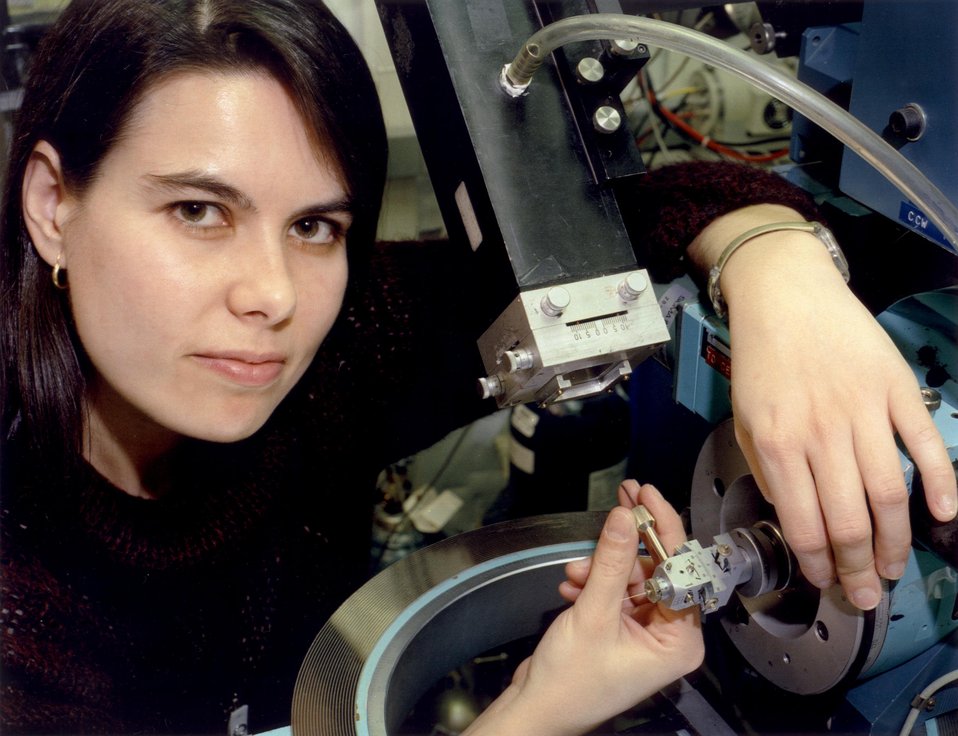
B. NOHEDA, BNL PHYSICS DEPARTMENT EXPLORES HIGH PERFORMANCE TRANSDUCERS.

BNL IS STUDYING PIEZOELECTRIC MATERIALS, MATERIALS THAT CAN BE DEFORMED BY THE APPLICATION OF AN ELECTRIC FIELD, OR THAT PRODUCE AN ELECTRIC CURRENT WHEN PHYSICALLY DEFORMED. ONE OF THE MOST IMPORTANT PIEZOELECTRIC MATERIALS IS A CERAMIC KNOWN AS PZI, WHICH IS USED AS A TRANSDUCER FOR TRANSFORMING THE VIBRATIONS OF SOUND WAVES INTO ELECTRICAL CURRENT AND VICE VERSA IN DEVICES SUCH AS TELEPHONES, SONAR SYSTEMS, AND ULTRASOUND MACHINES.